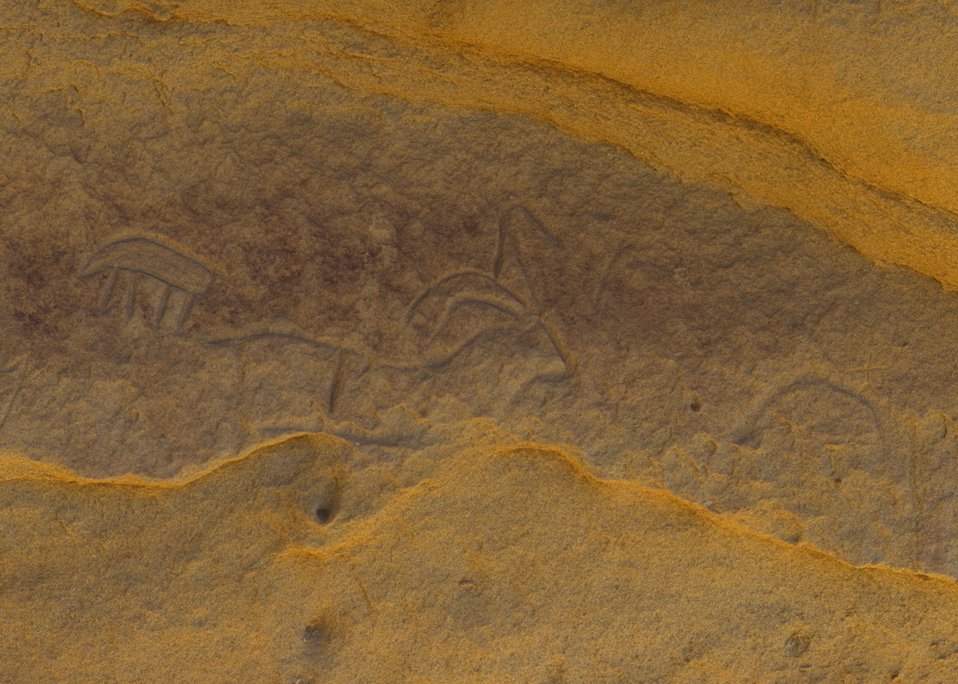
White Mountain Petroglyphs, Rock Springs Field Office.